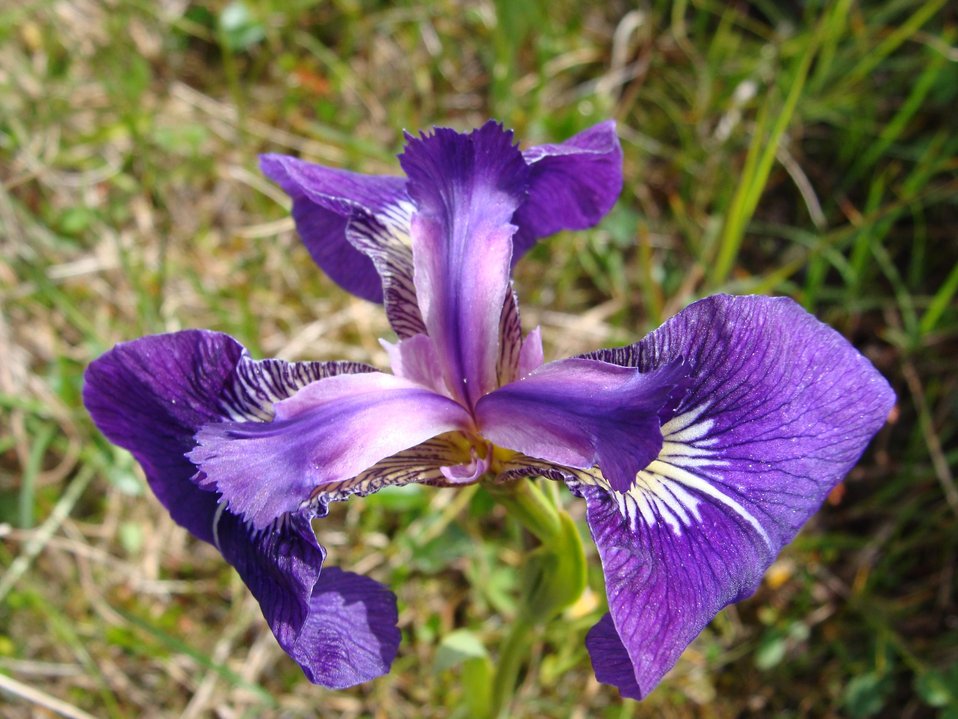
iris, Izembek-Becharof National Wildlife Refuges, AK

Photo: Corey A. Anco, USFWS
2011 Wilderness Fellow